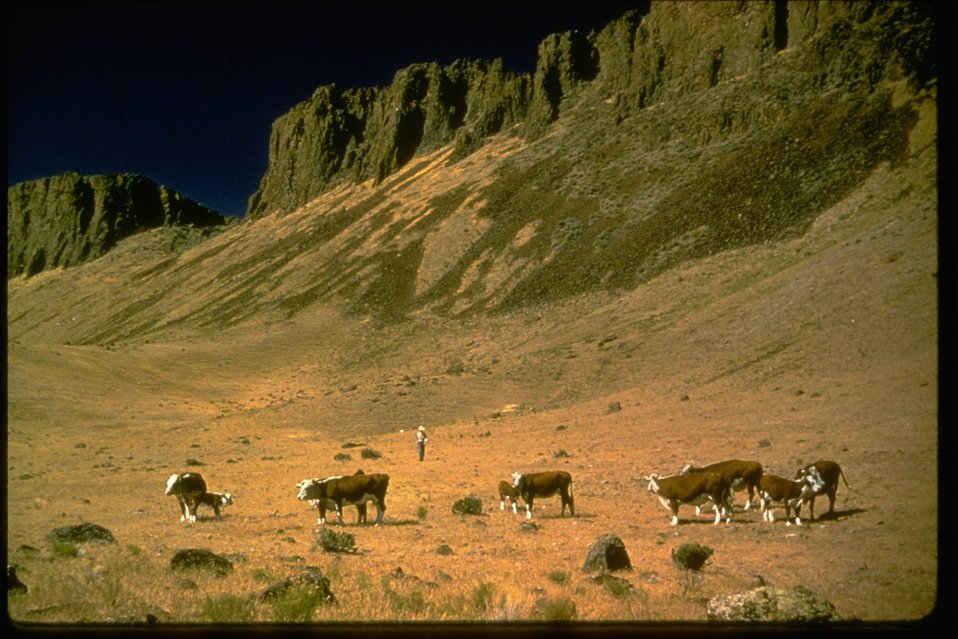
Just below the bluffs, a man walks to his grazing cows.